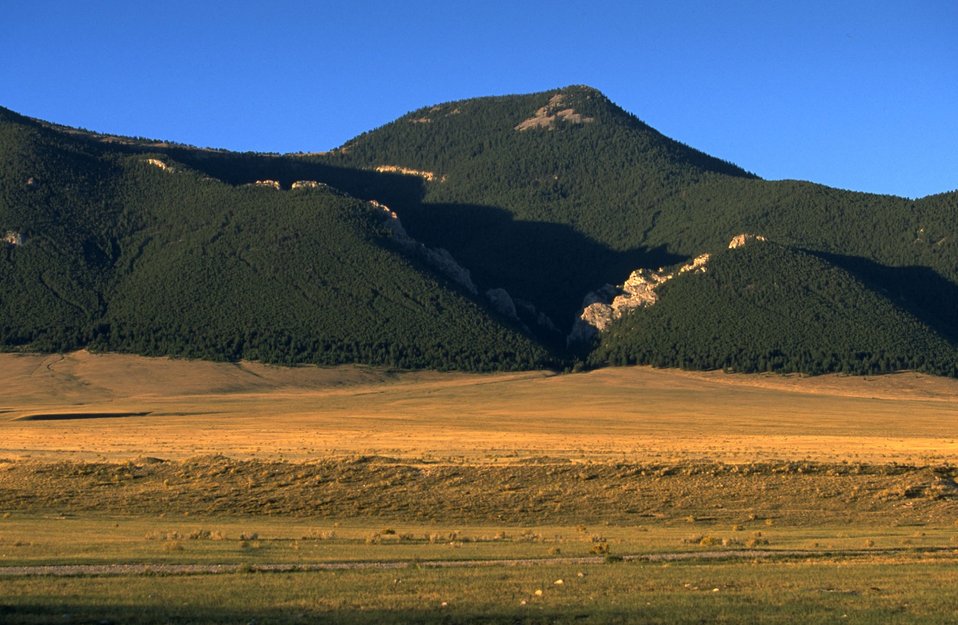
Grassy slope leading to forested mountain